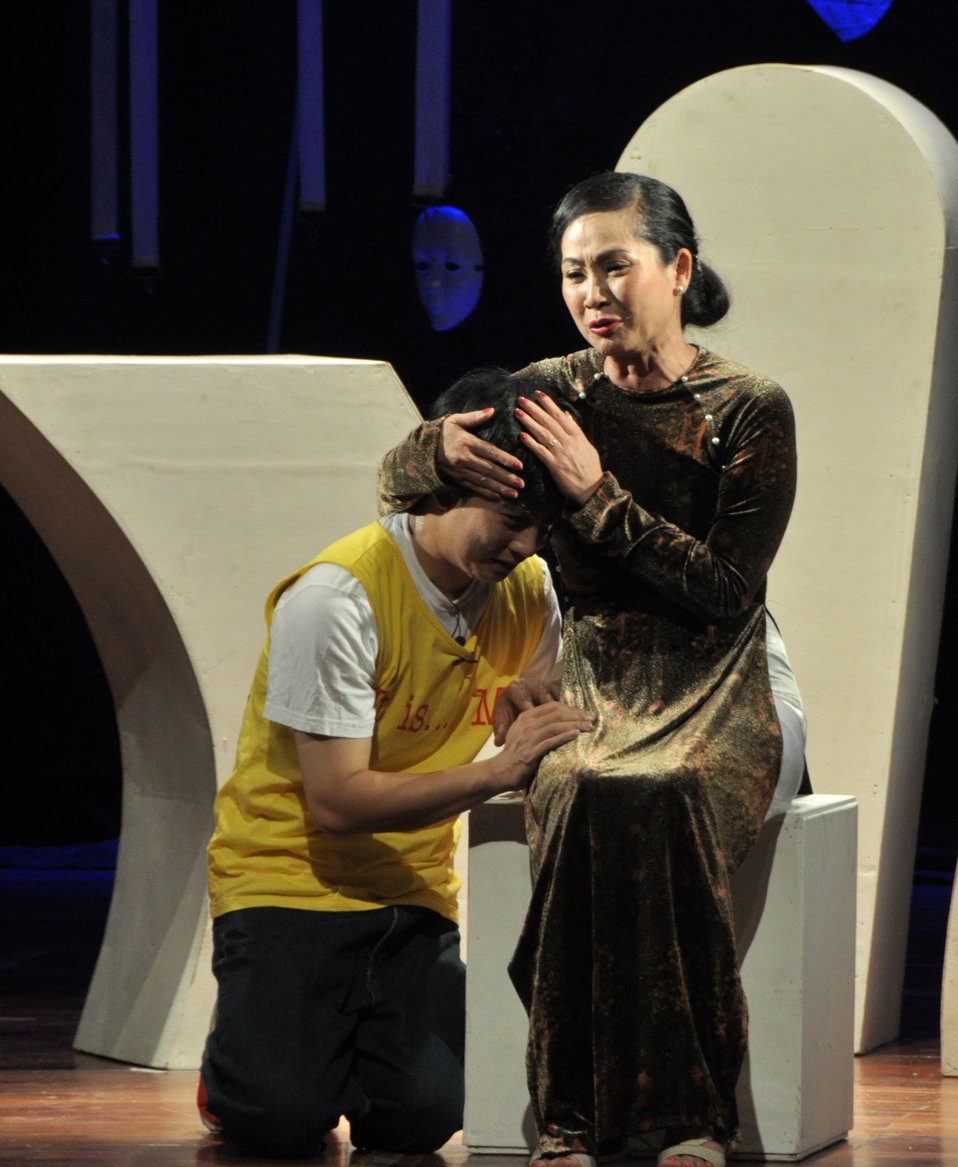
PEPFAR Musical Questions and Exclamations

Hanoi, May 17, 2013